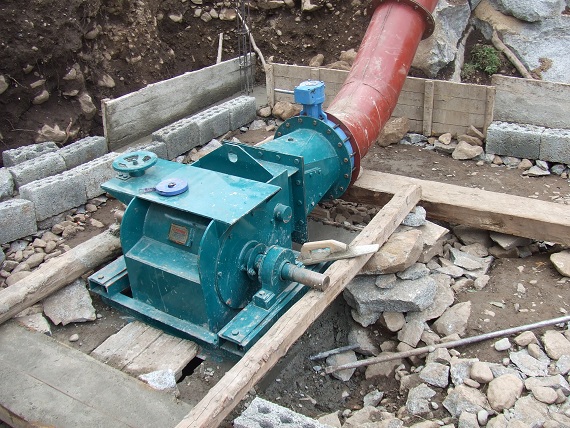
On Site of Project

A new wave of energy has swept a remote village of Matta Tehsil. Children are excited, elders relieved. Electricity had lit their dark houses after over six decades of independence and connected them to the modern world.
“We can now watch cartoons on the TV just like all the other children,” said an excited child during the inauguration of a micro-hydropower station on Saturday.
The community-based power station, which will supply electricity to about 110 households in Swatai village, has been installed with the assistance of Small Grants Ambassador Fund Program of the USAID in collaboration with the Swat Participatory Council (SPC).